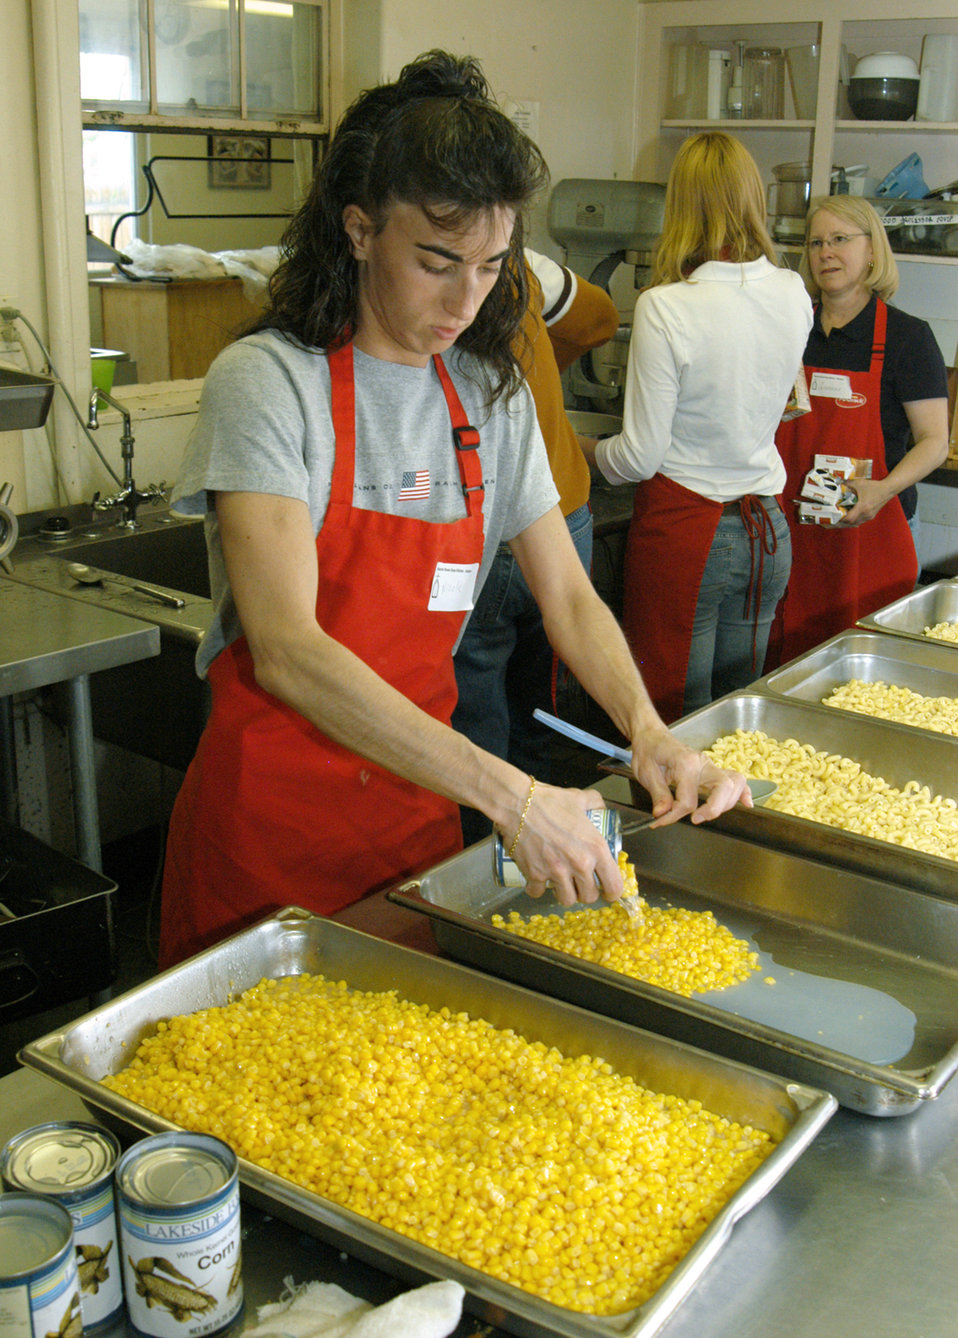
Volunteers give to community at Marian House

COLORADO SPRINGS, Colo. -- Tech. Sgt. Nicola Natale pours corn into cooking pans to serve at lunch at Marian House. The house provides food and other aid to people who cannot afford a warm meal. Sergeant Natale is assigned to the 50th Contracting Squadron at nearby Schriever Air Force Base.